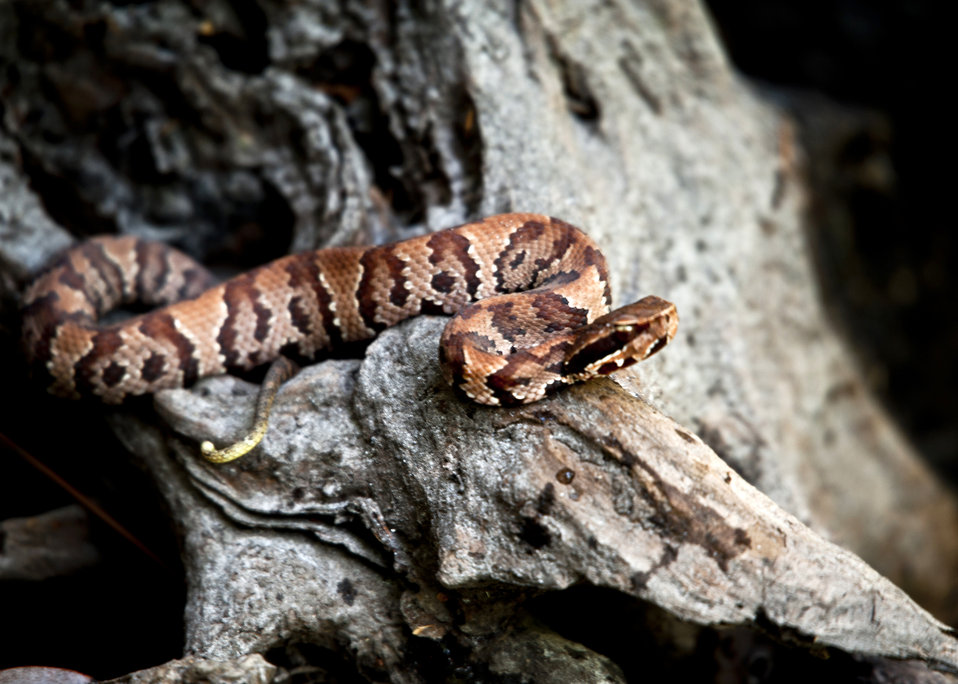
Earth Day Kayak Tour

A juvenile water moccasin rests on a tree branch above Turkey Creek April 21, 2011, at Eglin Air Force Base, Fla.